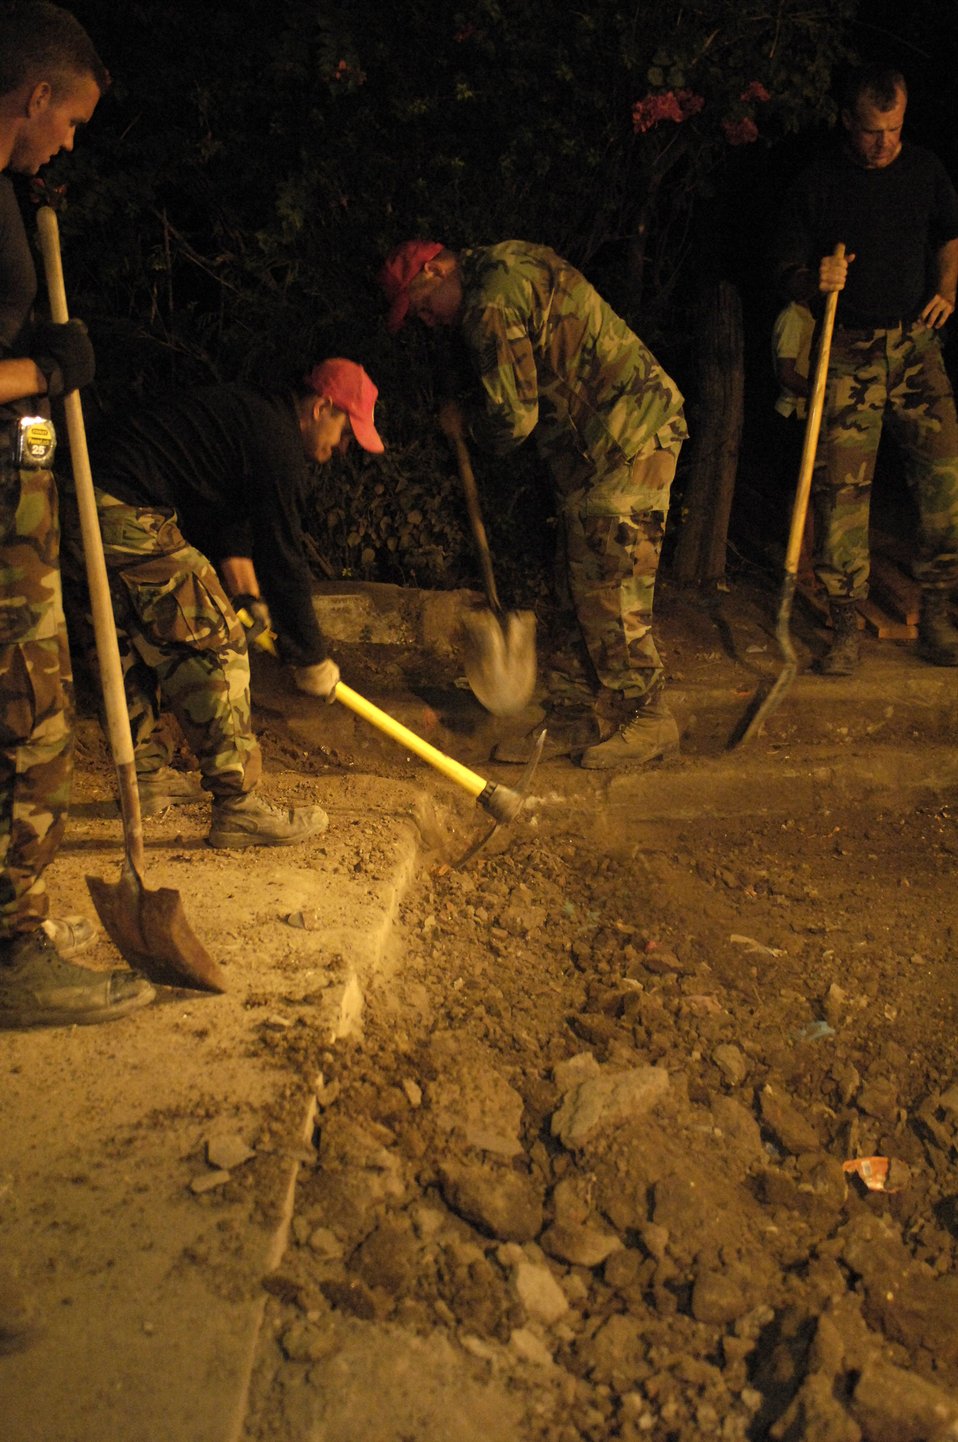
New Horizons-Nicaragua 2007

Airmen deployed with 820th Expeditionary Red Horse Squadron work on replacing a roadway March 2 in Santa Teresa, Nicaragua. The effort was part of New Horizons-Nicaragua 2007, a $7.25 million joint U.S. and Nicaraguan military humanitarian and training exercise, providing a new school, and medical clinic, as well as free health and veterinary care, giving aid and strengthening bonds between the two nations.